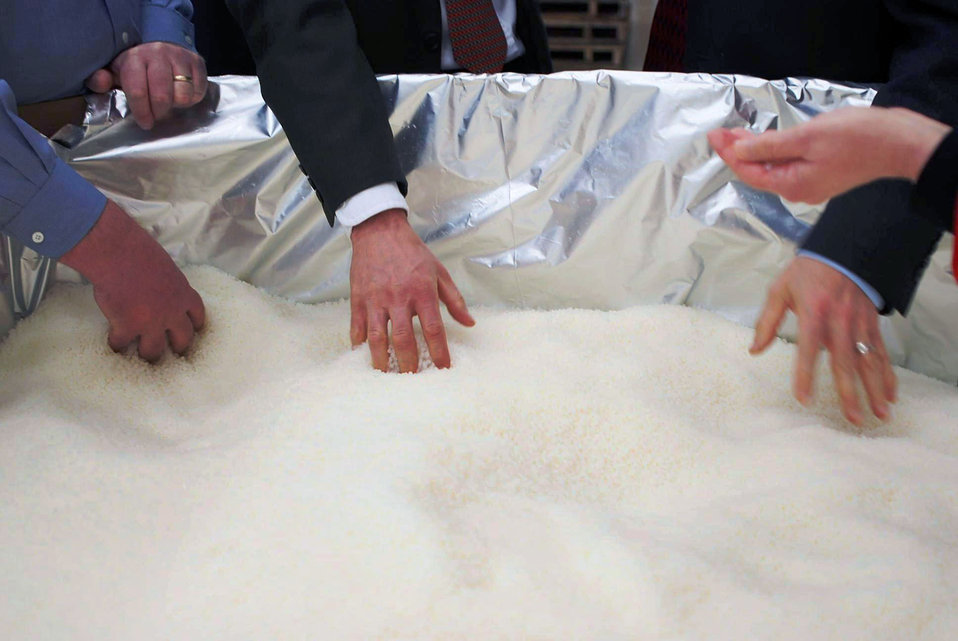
Hands inspect a large bin of plastic pellets made from corn during a walk through of Plastic Suppliers Inc. in Columbus, OH on Friday, Jan. 31, 2014. The pellets are converted to a plastic film with multiple applications ranging from tamper bands used on food containers to 3D-printed items and cell phone covers.